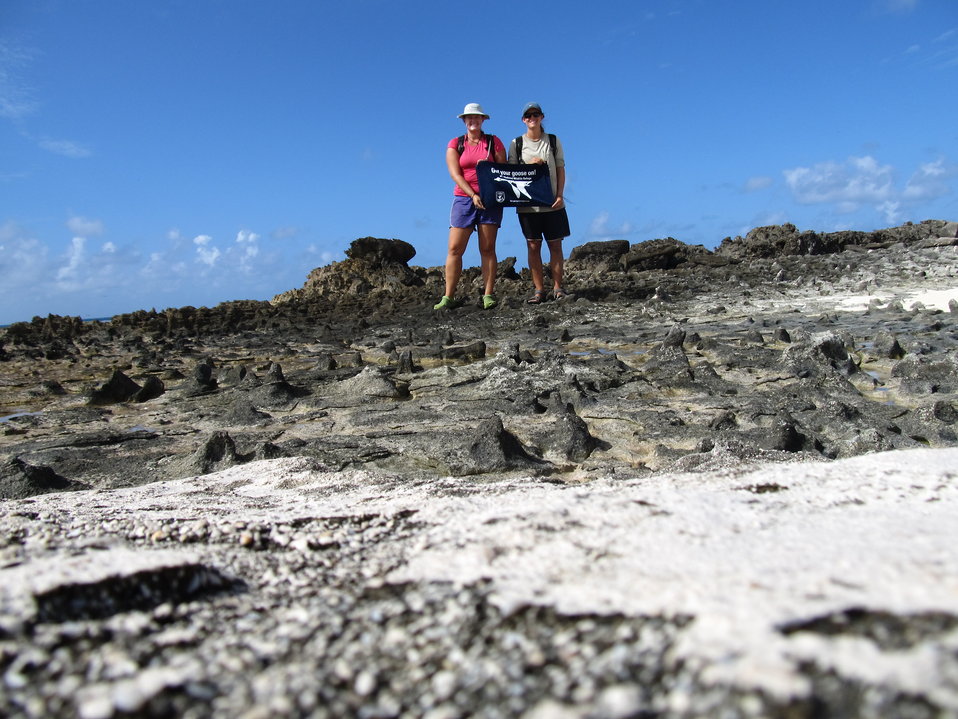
Get Your Goose On! - Laysan Style

Photo taken at Laysan Island in the Papahanaumokuakea Marine National Monument, Hawaiian Islands National Wildlife Refuge. Laysan is located approximately 800 miles northwest of Honolulu, Hawaii and is a remote field camp staffed year round for habitat restoration and population monitoring.